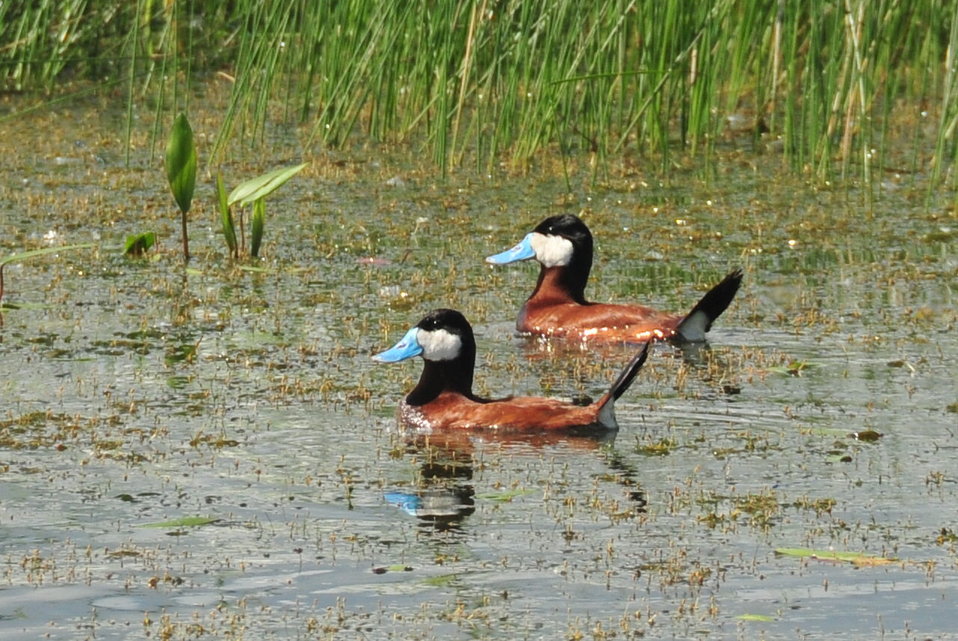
Ruddy Duck drakes Sand Lake National Wildlife Refuge

Ruddy ducks at South Dakota’s Sand Lake NWR.